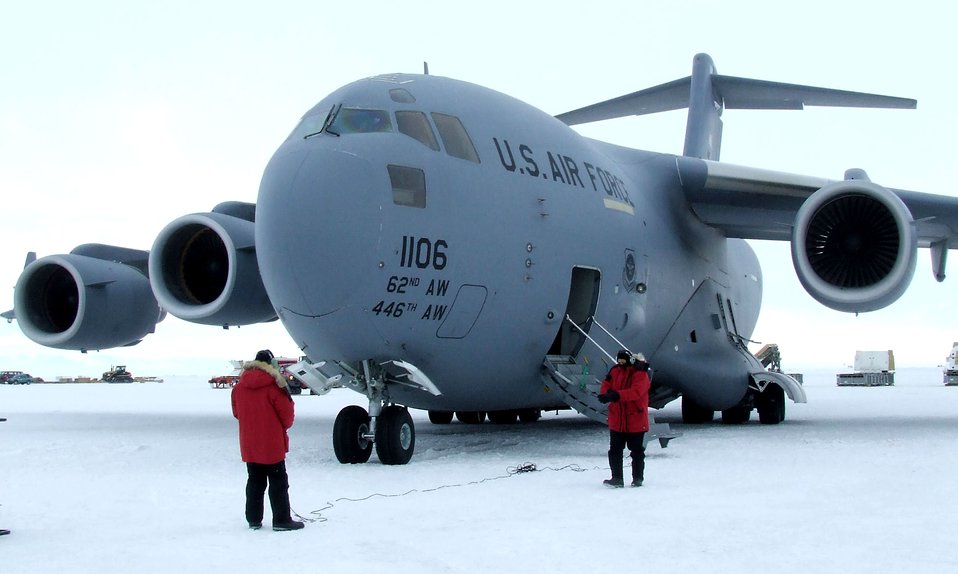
Icy ops

Senior Airman Kory Williams, left, and Senior Master Sgt. David Stutts assess the C-17 Globemaster III's condition after landing on the ice runway Nov. 16 at McMurdo Station, Antarctica. The jet, from McChord Air Force Base, Wash., shuttled supplies, equipment and personnel for Operation Deep Freeze. Airman Williams is from the 8th Airlift Squadron and Sergeant Stutts is from the 313th AS.